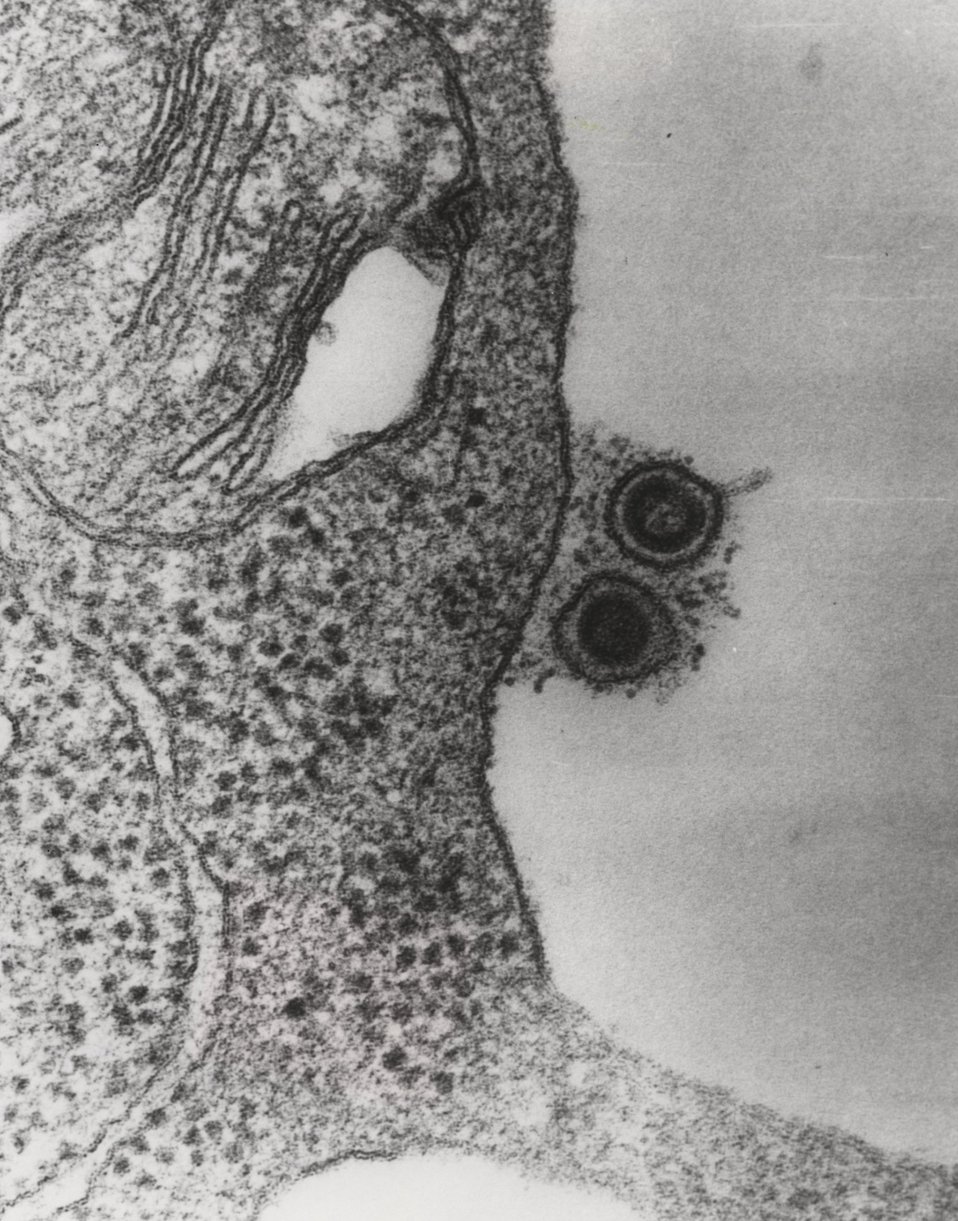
VIRUS STUDIES...The role of viruses as possible initiators of certain types of cancers is under study at the U.S. Atomic Energy Commission's Oak Ridge National Laboratory's Biology Division. c. 1974